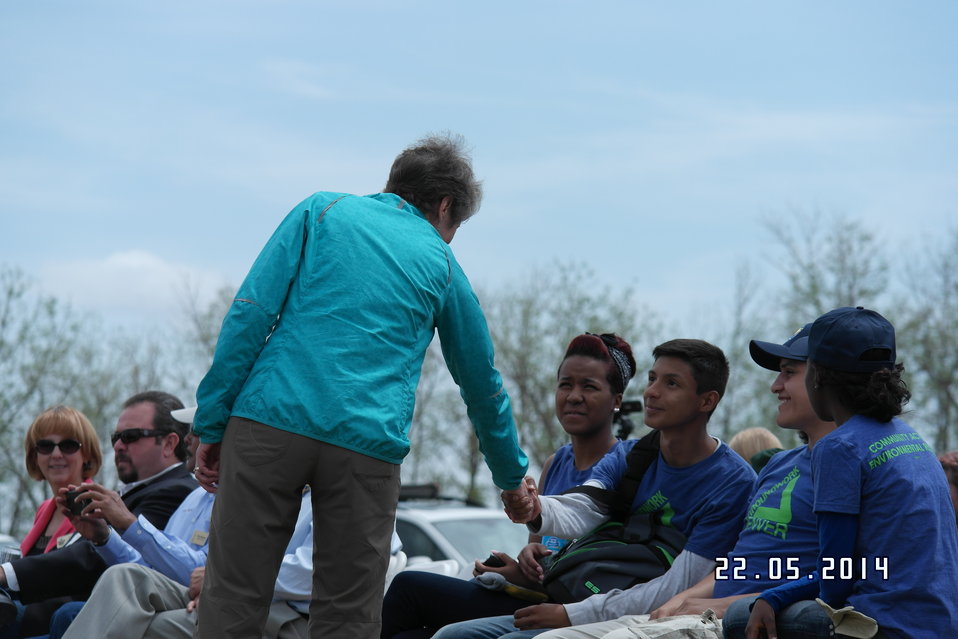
Secretary Jewell Announces $6.7 for Youth Conservation Jobs

Jewell made the announcement at an event at Rocky Mountain Arsenal National Wildlife Refuge outside Denver, Colorado, where she was joined by U.S. Department of Agriculture (USDA) Deputy Under Secretary for Natural Resources and the Environment Arthur “Butch” Blazer; Greg Knadle, Vice President for Government Relations of the National Fish and Wildlife Foundation (NFWF); Refuge Manager David Lucas and youth corps members of Groundwork Denver.